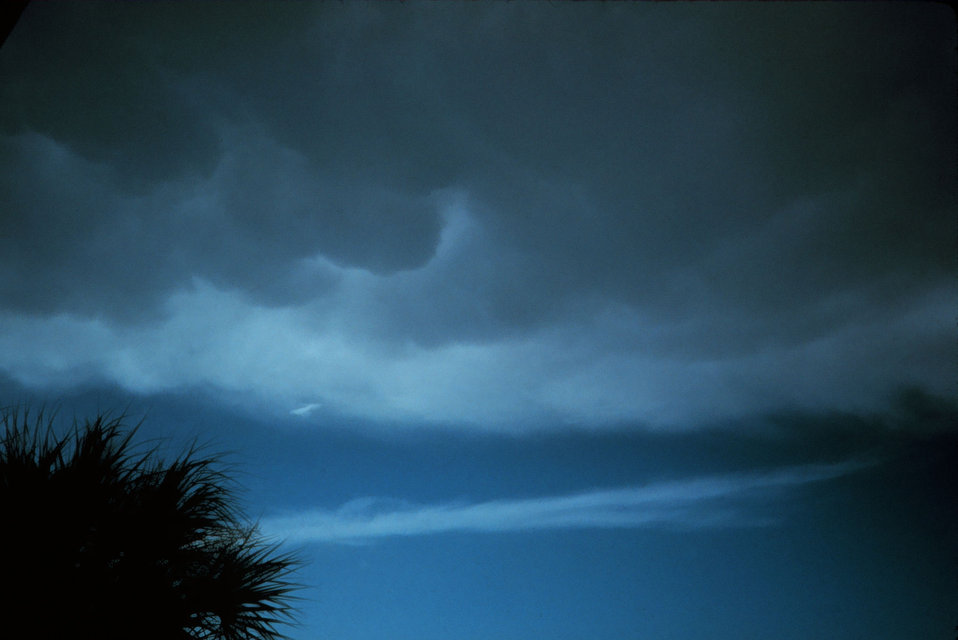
Mammatocumulus